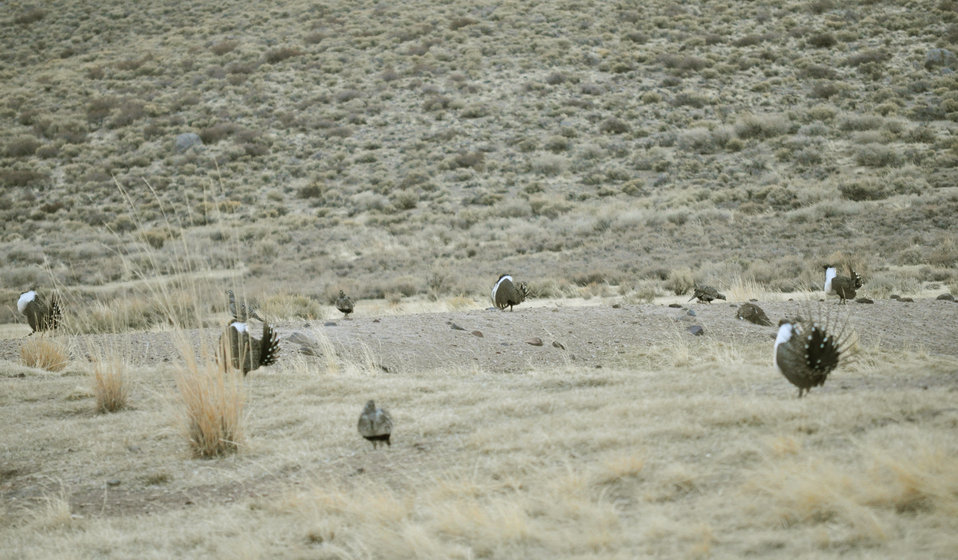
Greater Sage-Grouse at Lek

Greater sage-grouse lek near Bodie, California.